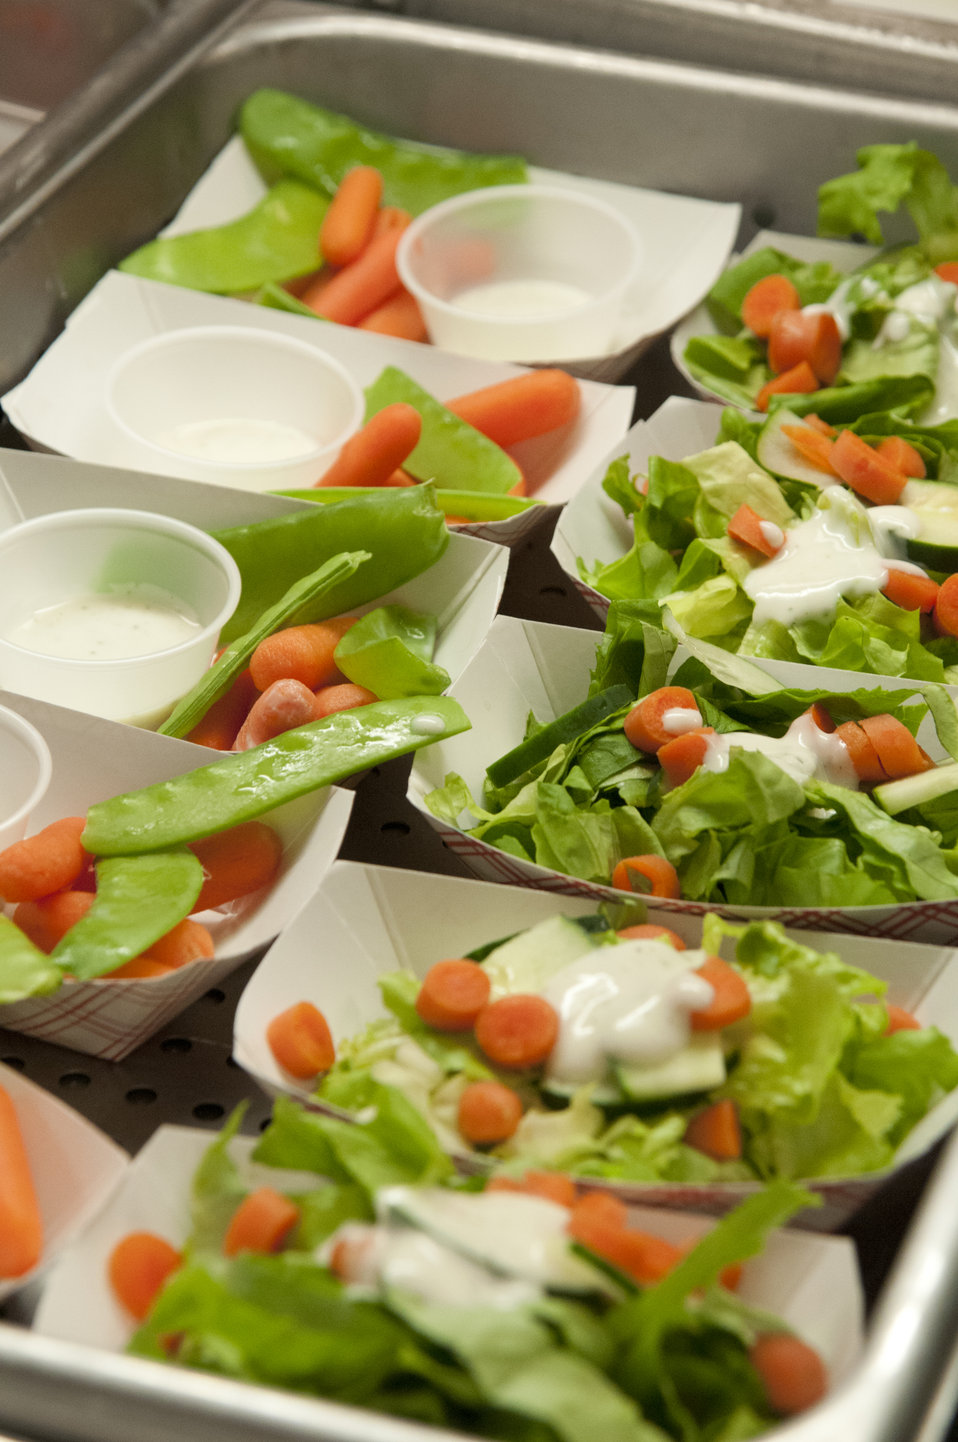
School lunch staff and students enjoy the new school lunch menu created to meet the new standards at the Yorkshire Elementary School in Manassas, VA on Friday, Sept. 7, 2012.